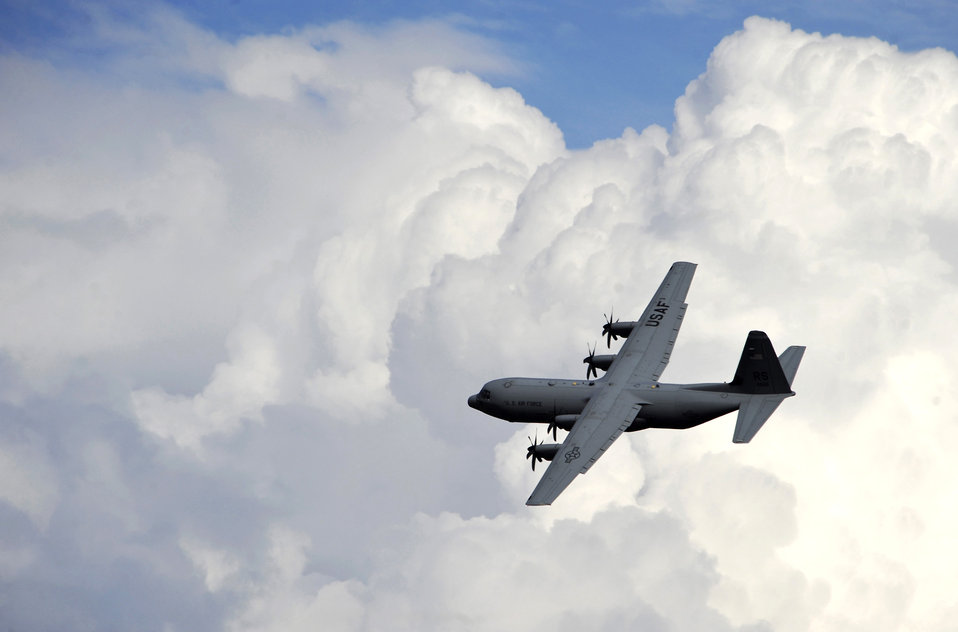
The sky's the limit

A C-130J Super Hercules performs maneuvers March 18, 2011, above Campia Turzii, Romania, as part of Carpathian Spring 2011.